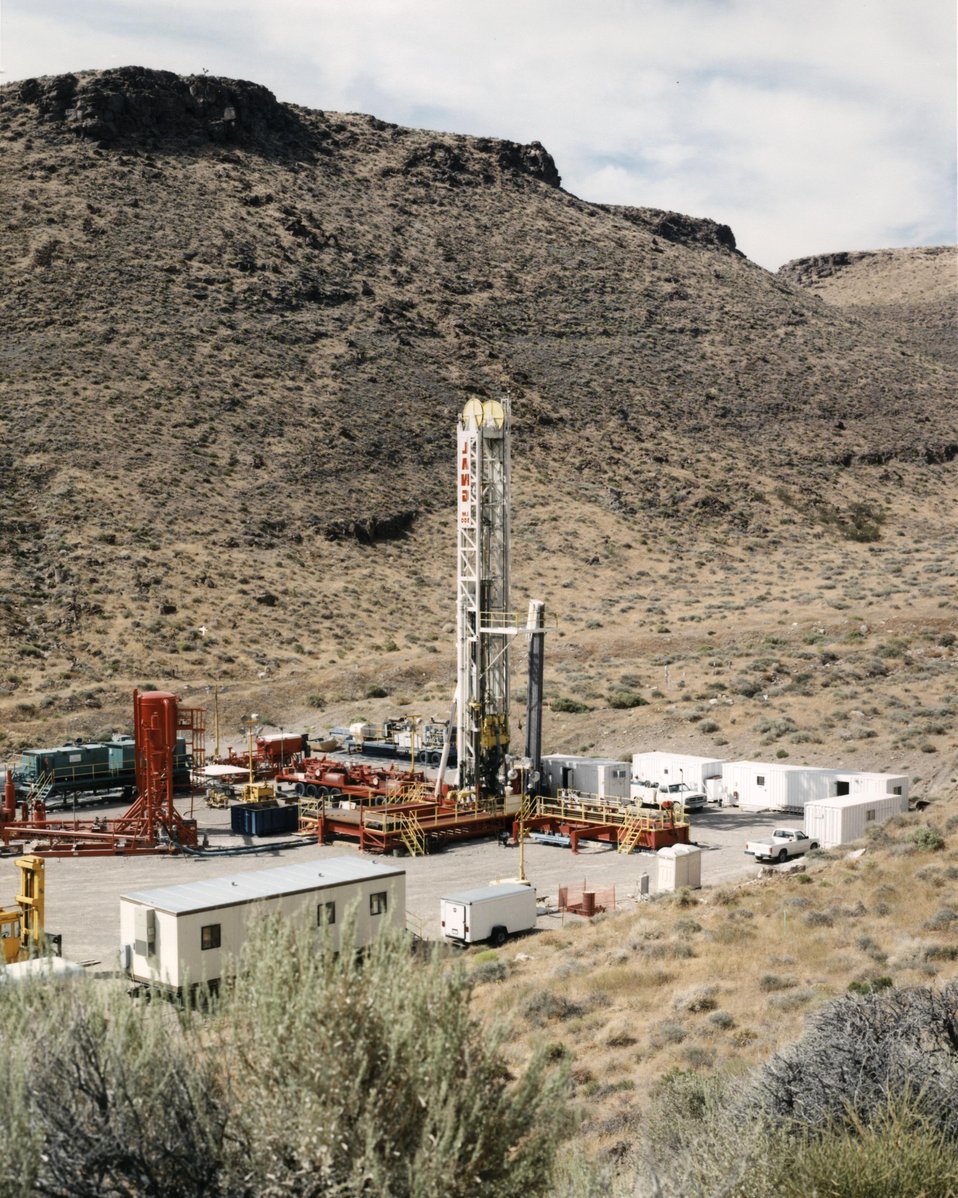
YUCCA MOUNTAIN CORE SAMPLING HYBRID DRILL RIG.

THE HYDRAULIC TOP-HEAD-DRIVE DRILL RIG USES BOTH MINING AND PETROLEUM INDUSTRY CONCEPTS TO OBTAIN CORE SAMPLES FROM THE UNSATURATED ZONE OF YUCCA MOUNTAIN, APPROXIMATELY 2600 FEET (780 METERS) DEEP. THE DRILLING IS PART OF THE STUDIES TO DETERMINE IF THE MOUNTAIN CAN STORE 70,000 TONS (63,000 METRIC TONS) OF HIGH LEVEL NUCLEAR WASTE FOR 10,000 YEARS.